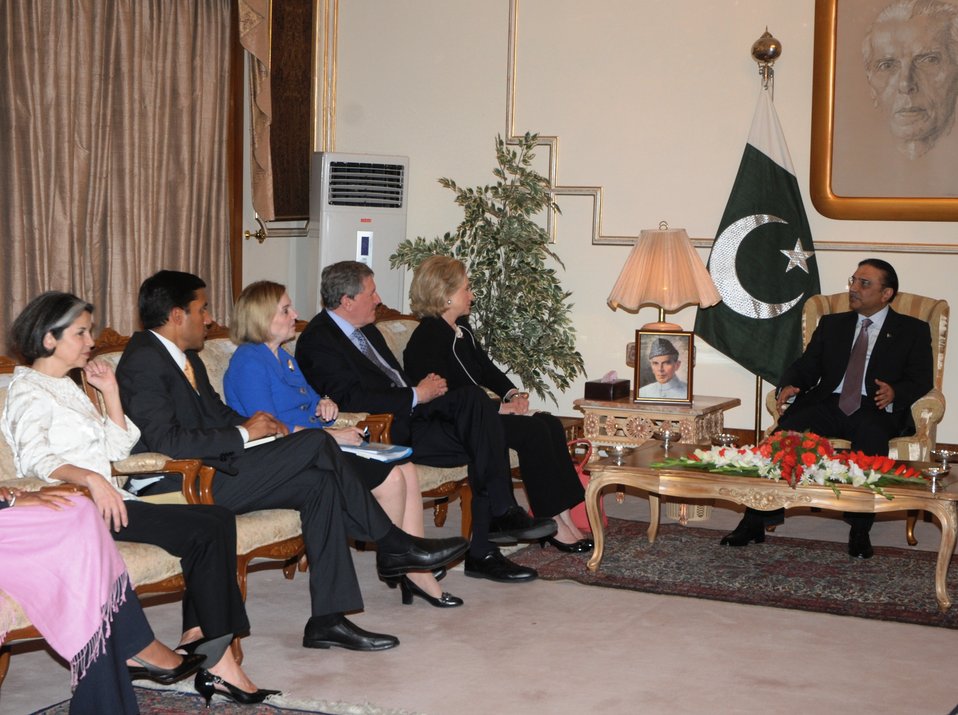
Pakistani President Asif Ali Zardai Meets With U.S. Secretary of State Hillary Rodham Clinton, Under Secretary Otero, USAID Administrator Shah, Ambassador Patterson and Special Representative Holbrooke

Pakistani President Asif Ali Zardai meets with U.S. Secretary of State Hillary Rodham Clinton and the U.S. delegation featuring (L to R) U.S. Under Secretary of State for Democracy and Global Affairs Maria Otero, USAID Administrator Rajiv Shah, U.S. Ambassador to Pakistan Anne W. Patterson , and U.S. Special Representative for Afghanistan and Pakistan Richard C. Holbrooke, at the Aiwan-e-Sadar in Islamabad, Pakistan, on July 18, 2010.